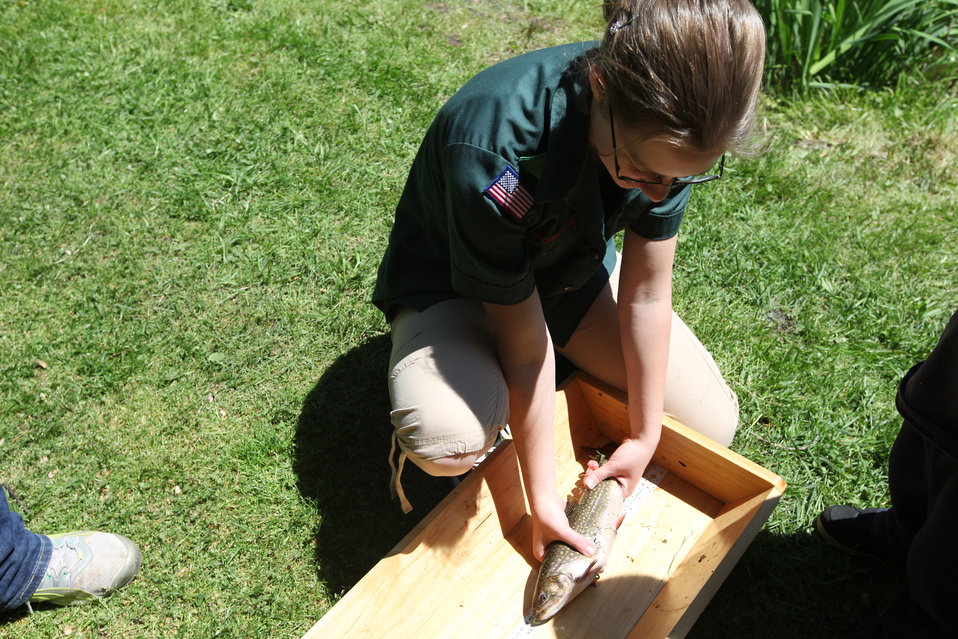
Youth Fishing Derby 2012

Megan Nagel/USFWS